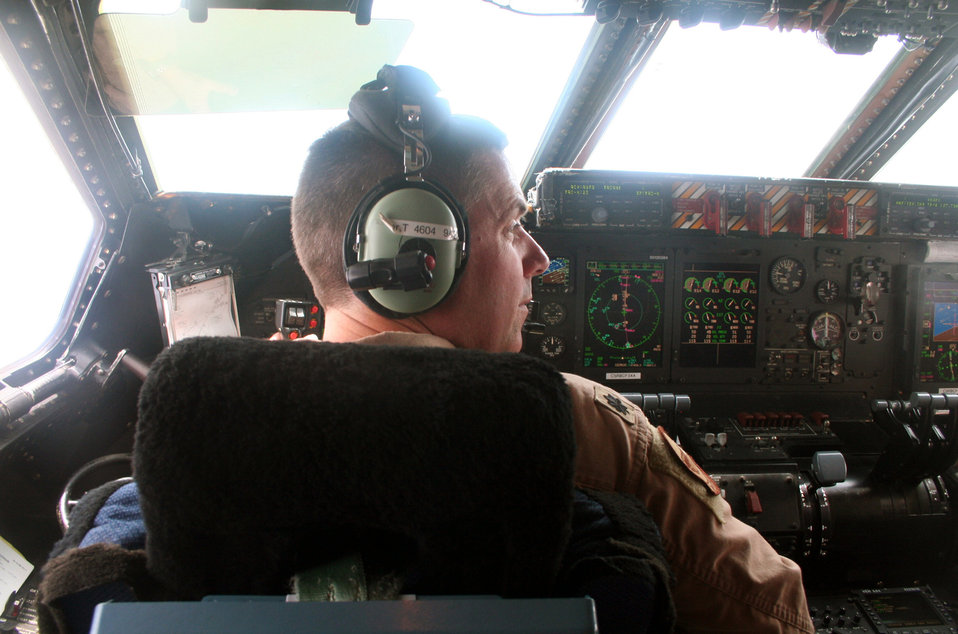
C-5M Completes First Arctic Overflight to Afghanistan

Lt. Col. Thomas Loper flies a C-5M Super Galaxy on a mission June 5, 2011, from Dover Air Force Base, Del. The C-5M's mission was to complete the first Arctic overflight from Dover AFB to Bagram Airfield, Afghanistan. The plane successfully landed at Bagram 15 hours later June 6, 2011. Colonel Loper is with the 9th Airlift Squadron.